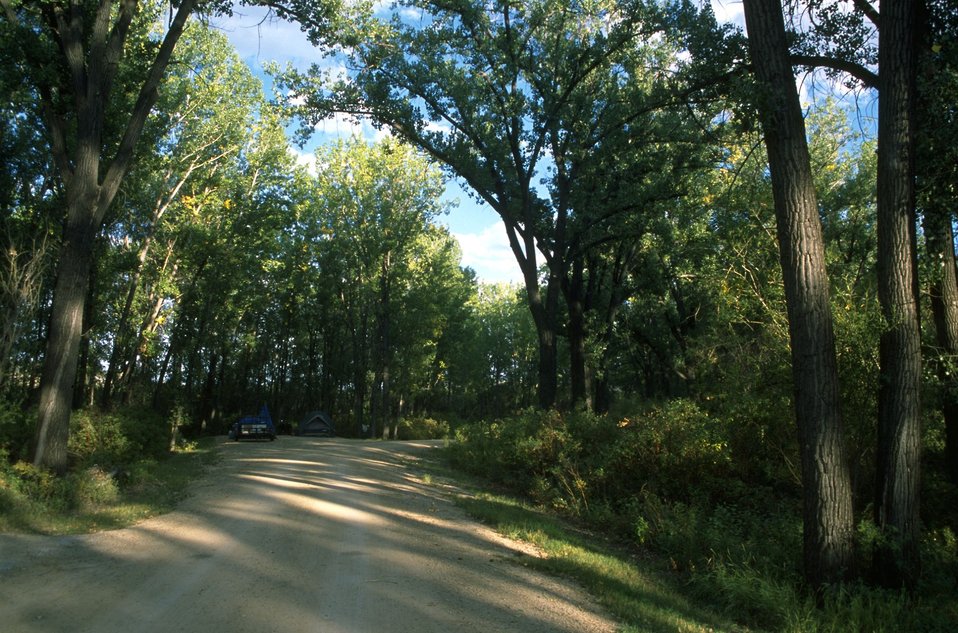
Kipp Recreation Area